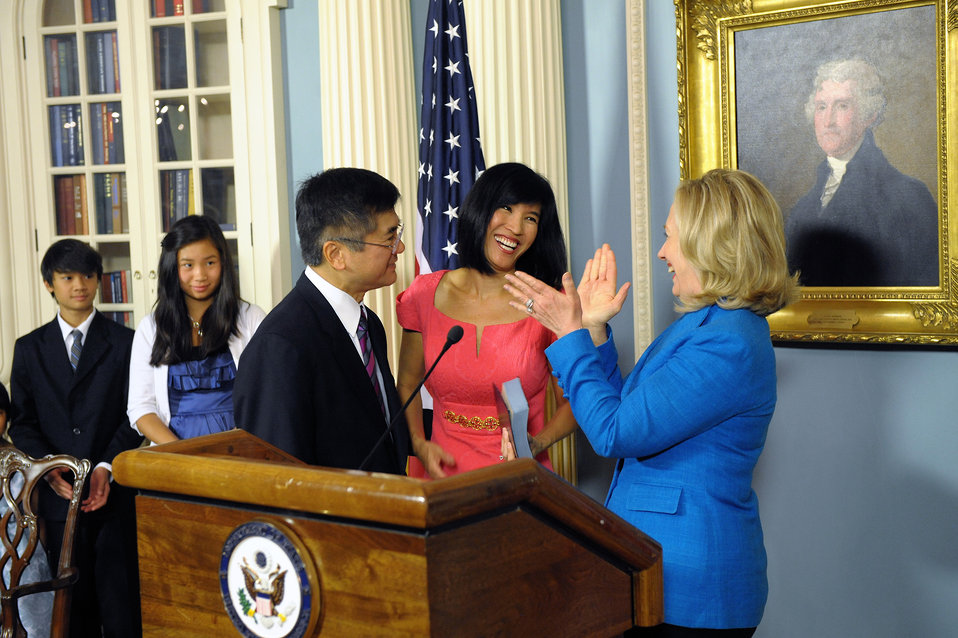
Secretary Clinton Swears in the Honorable Gary Locke as U.S. Ambassador to the People’s Republic of China

U.S. Secretary of State Hillary Rodham Clinton officiates the Swearing In Ceremony for the Honorable Gary Locke, U.S. Ambassador to the People’s Republic of China, at the U.S. Department of State in Washington, D.C., on August 1, 2011.